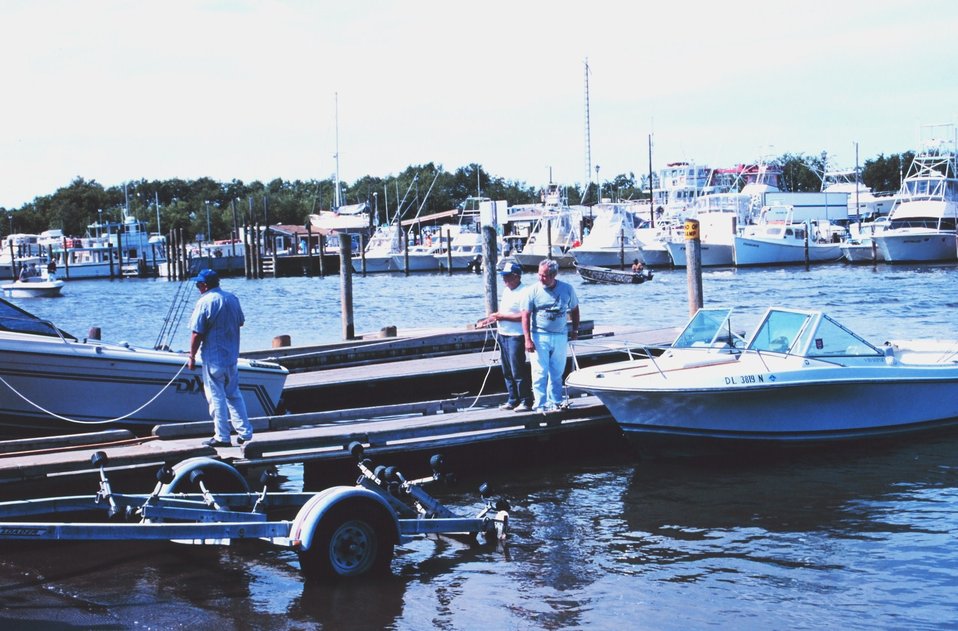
A public boat ramp at Lewes